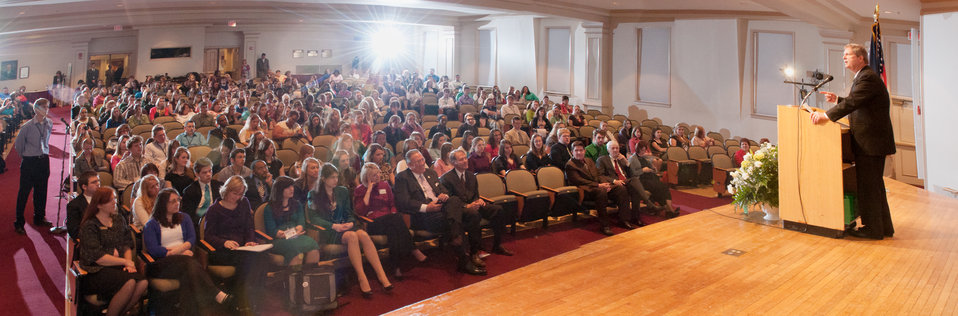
Virtual panorama of U.S. Department of Agriculture (USDA) Secretary Tom Vilsack (at podium) responding to a question from Garrett Kays about land grants, during the National 4-H Conference on Tuesday, April 5, 2011 in Washington, DC. The conference is the premier youth development opportunity of the USDA. Aged between 15-19 years old the attendees were selected by various means by their states to be delegates to the conference. USDA photo illustration by Lance Cheung.